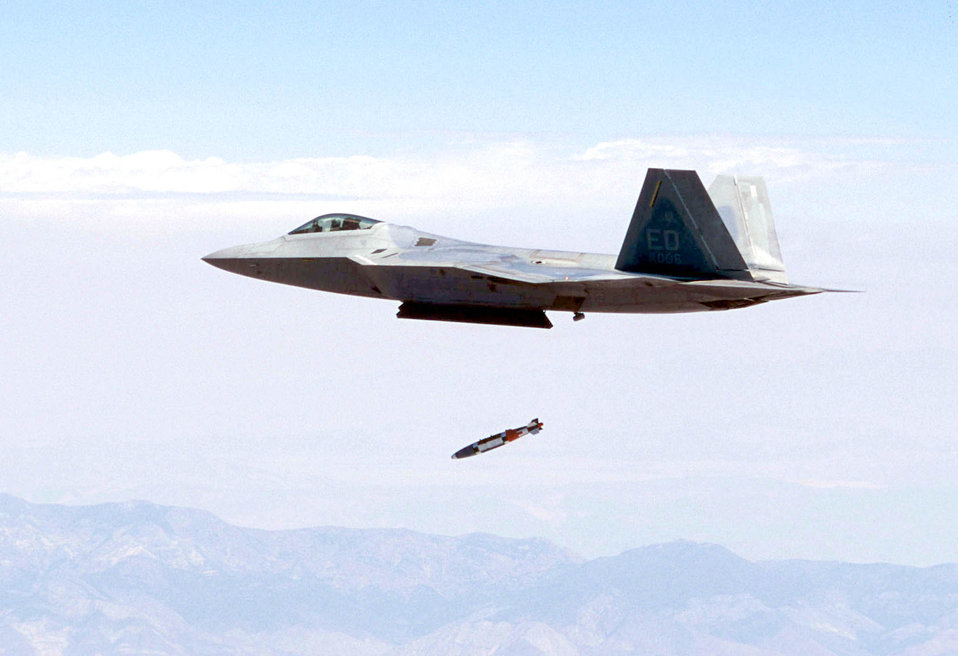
Supersonic JDAM drop marks increase in Raptor capability

OVER CALIFORNIA -- An F/A-22 Raptor, flown by Maj. John Teichert, releases a guided bomb unit-32 1,000-pound joint direct attack munitions at supersonic speed for the first time near California's Panamint Mountain range. Major Teichert is a test pilot assigned to the 411th Flight Test Squadron at Edwards Air Force Base, Calif.